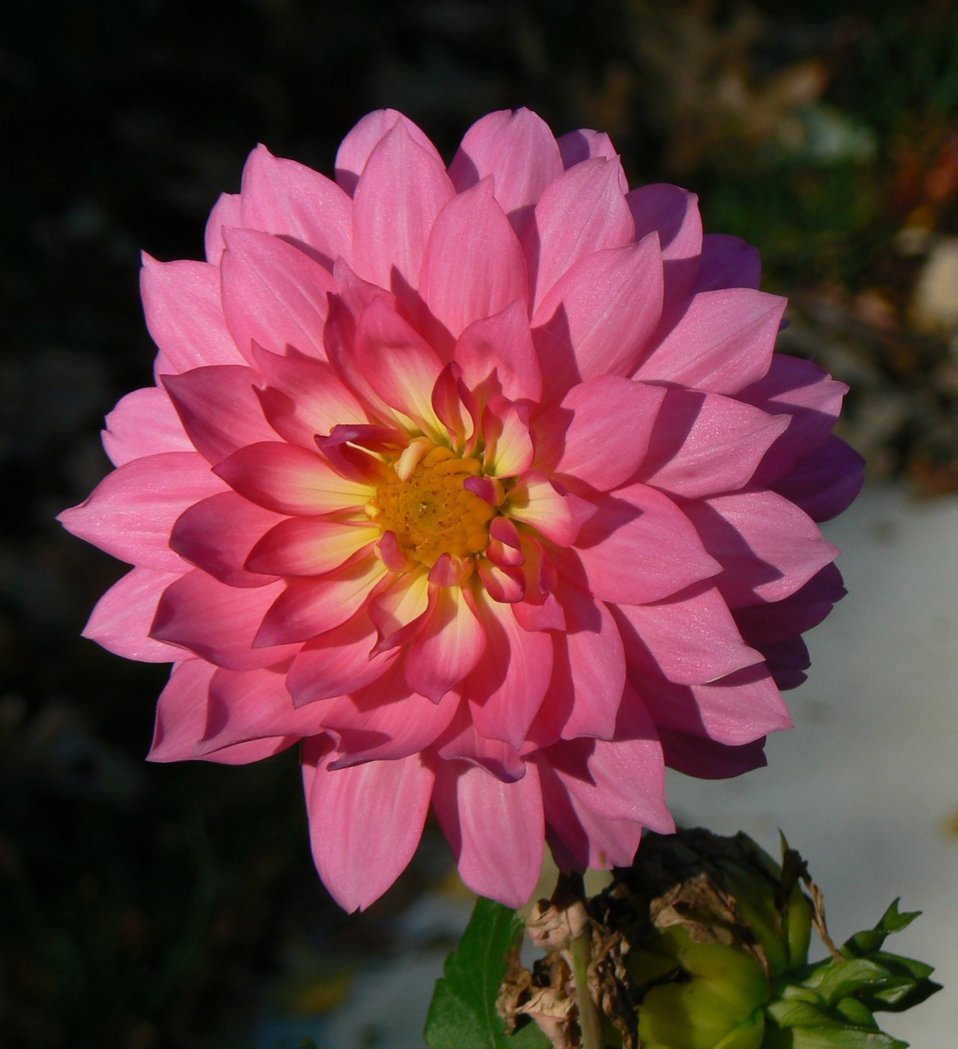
Photo of the Week - Dahlia at Sunrise

Photo of the Week - 06/09/2010

Dahlia at sunrise at Cape May National Wildlife Refuge.